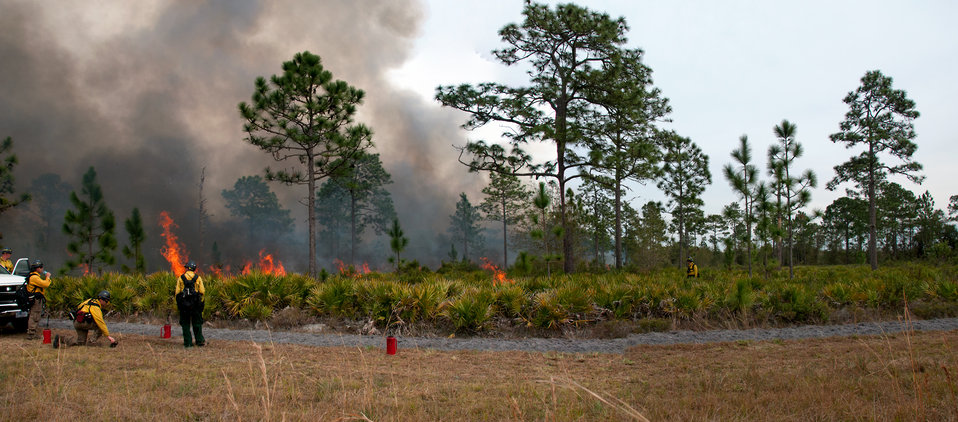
Lake Woodruff Volusia 5 Prescribed Fire Febuary 2014

USFWS firefighters look on as a lone firefighter ignites interior vegetation. On February, 12 2014 USFWS firefighters conducted a 137 acre prescribed fire at Lake Woodruff NWR to reduce the wildfire risk and enhance the wildlife habitat on the southern end of the refuge.